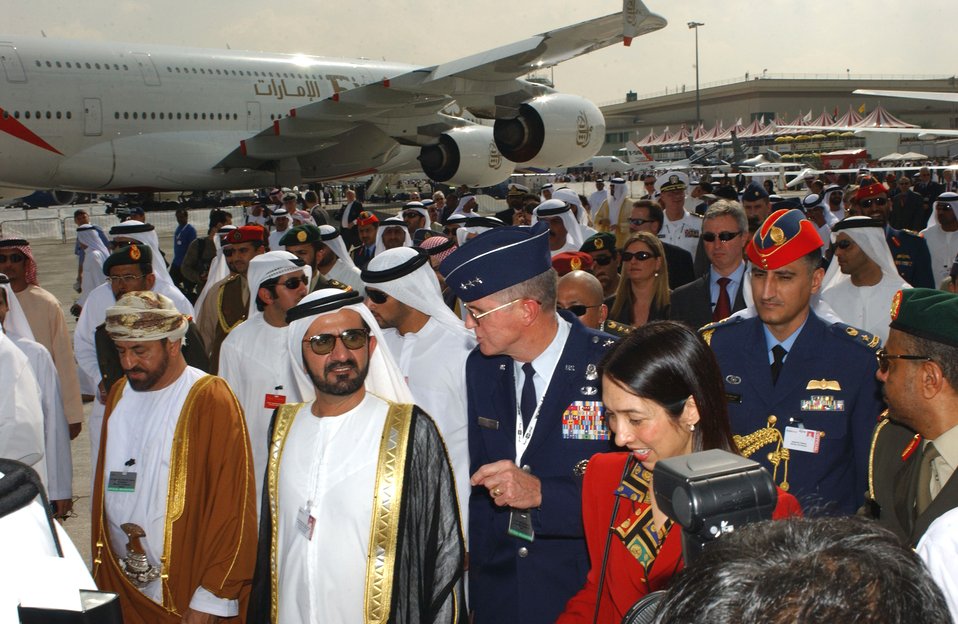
Performing in Dubai

DUBAI, United Arab Emirates (AFPN) -- General Shaikh Mohammed bin Rashid Al Maktoum, Crown Prince of Dubai and UAE Minister of Defense, is accompanied by Lt. Gen. Walter E. Buchanan III, U.S. Central Command Air Forces Commander and U.S. Ambassador to the UAE Michelle J. Sisson during opening ceremonies of the 9th International Dubai Air Show.